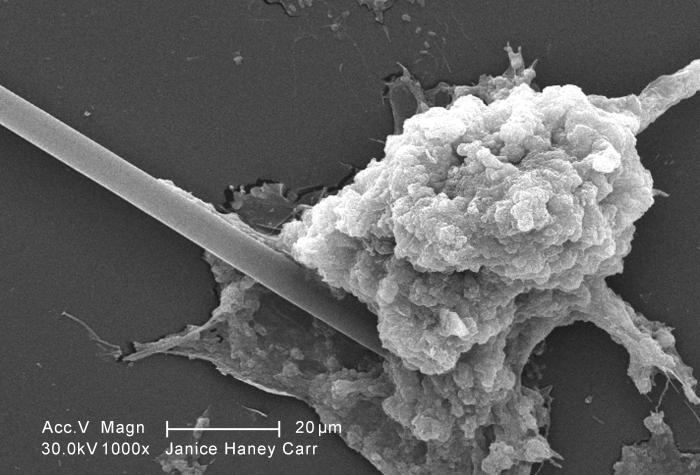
At a magnification of 1000X, this scanning electron micrograph (SEM) of an untreated water specimen extracted from a wild stream mainly used to control flooding during inclement weather, revealed the presence of unidentified organisms, which included bacteria, protozoa, and algae. In this particular image, a needle-shaped structure appeared to be caught up in an amorphous gelatinous biofilm, which though unidentified, appeared to be the green algae, Ankistrodesmus. See PHIL 11664 for another view of this spear-shaped organism. For a colorized version of this image see PHIL 11716.